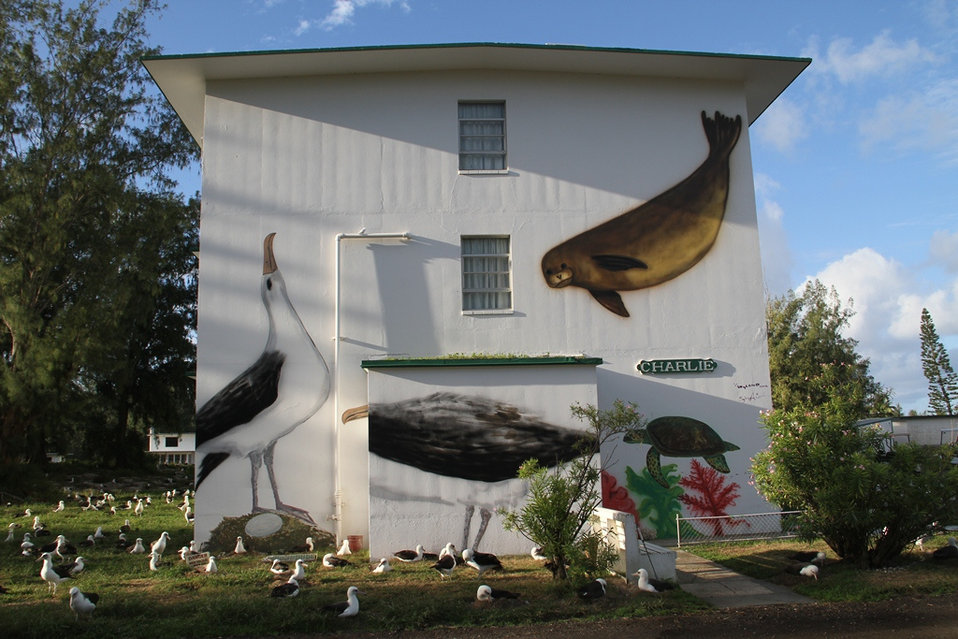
Wyland's mural on Charlie Barracks

Wyland's completed mural on Charlie Barracks.
Midway Atoll National Wildlife Refuge,
Papahānaumokuākea Marine National Monument
January 2012